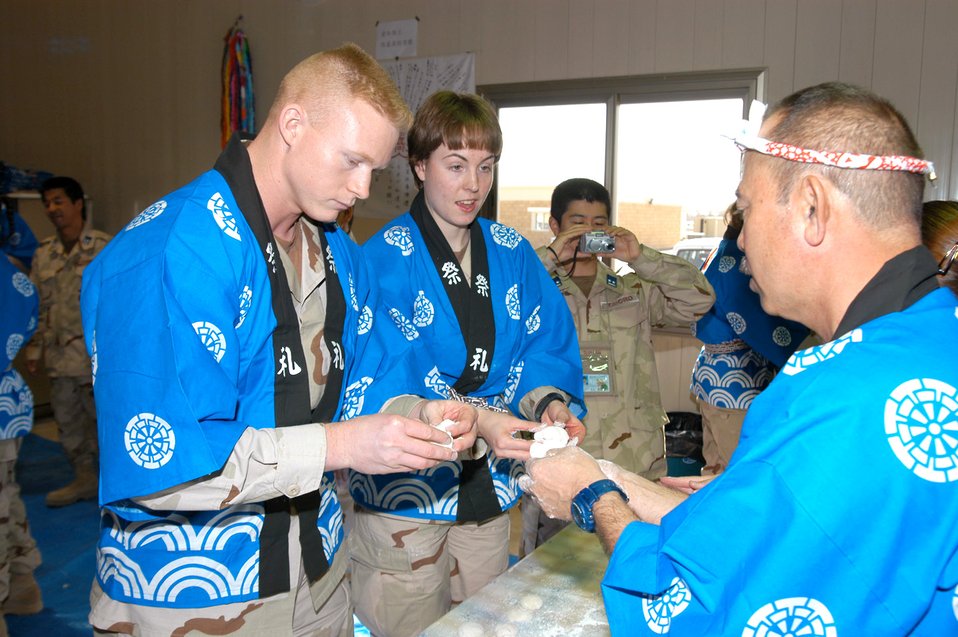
Mochi mashing

SOUTHWEST ASIA -- A Japanese airman (right) shows 2nd Lt. Harold Shirley and 1st Lt. Danielle Boz how to mold sticky rice, into mochi, a Japanese rice cake traditionally made and eaten during New Year's festivities. American and Japanese airmen work together at a forward-deployed location here.